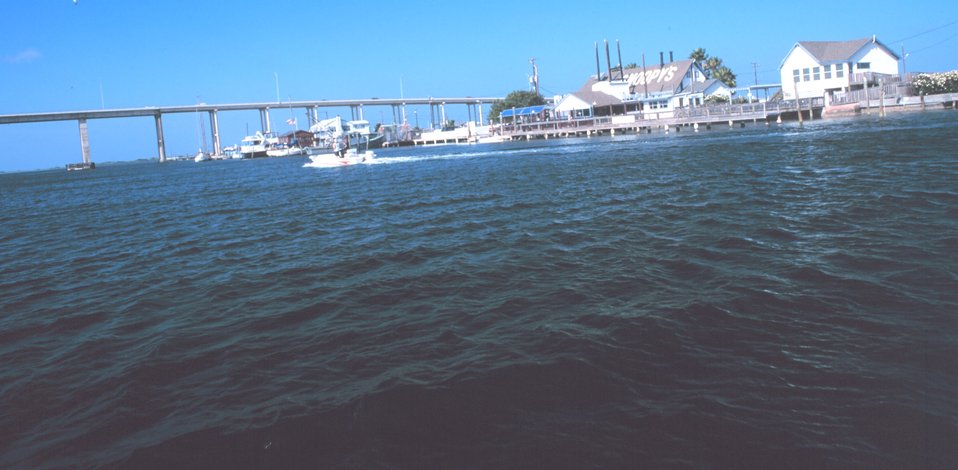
Approaching the JFK Causeway connecting Corpus Christi with Padre Island